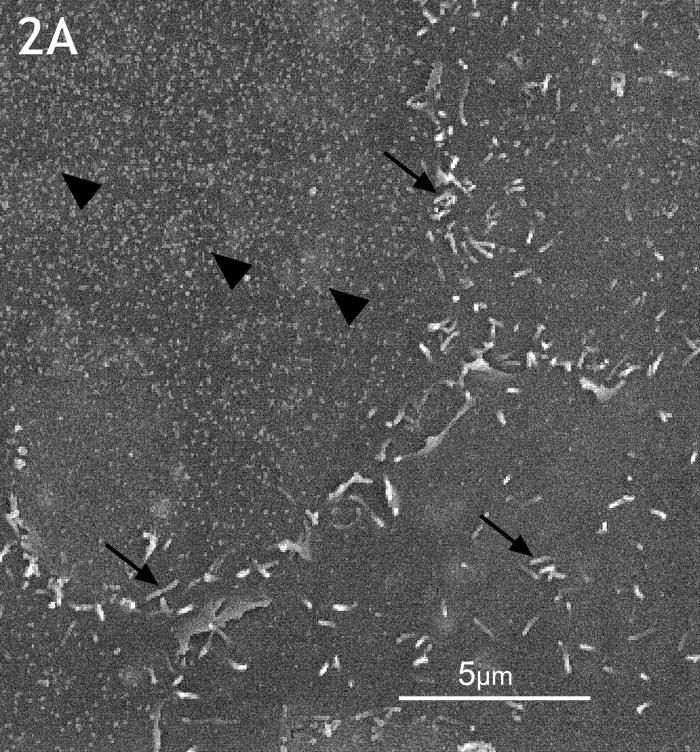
This SEM of SARS-infected Vero E6 cells reveals the proliferation of cell surface virus covered (arrows) pseudopodia.